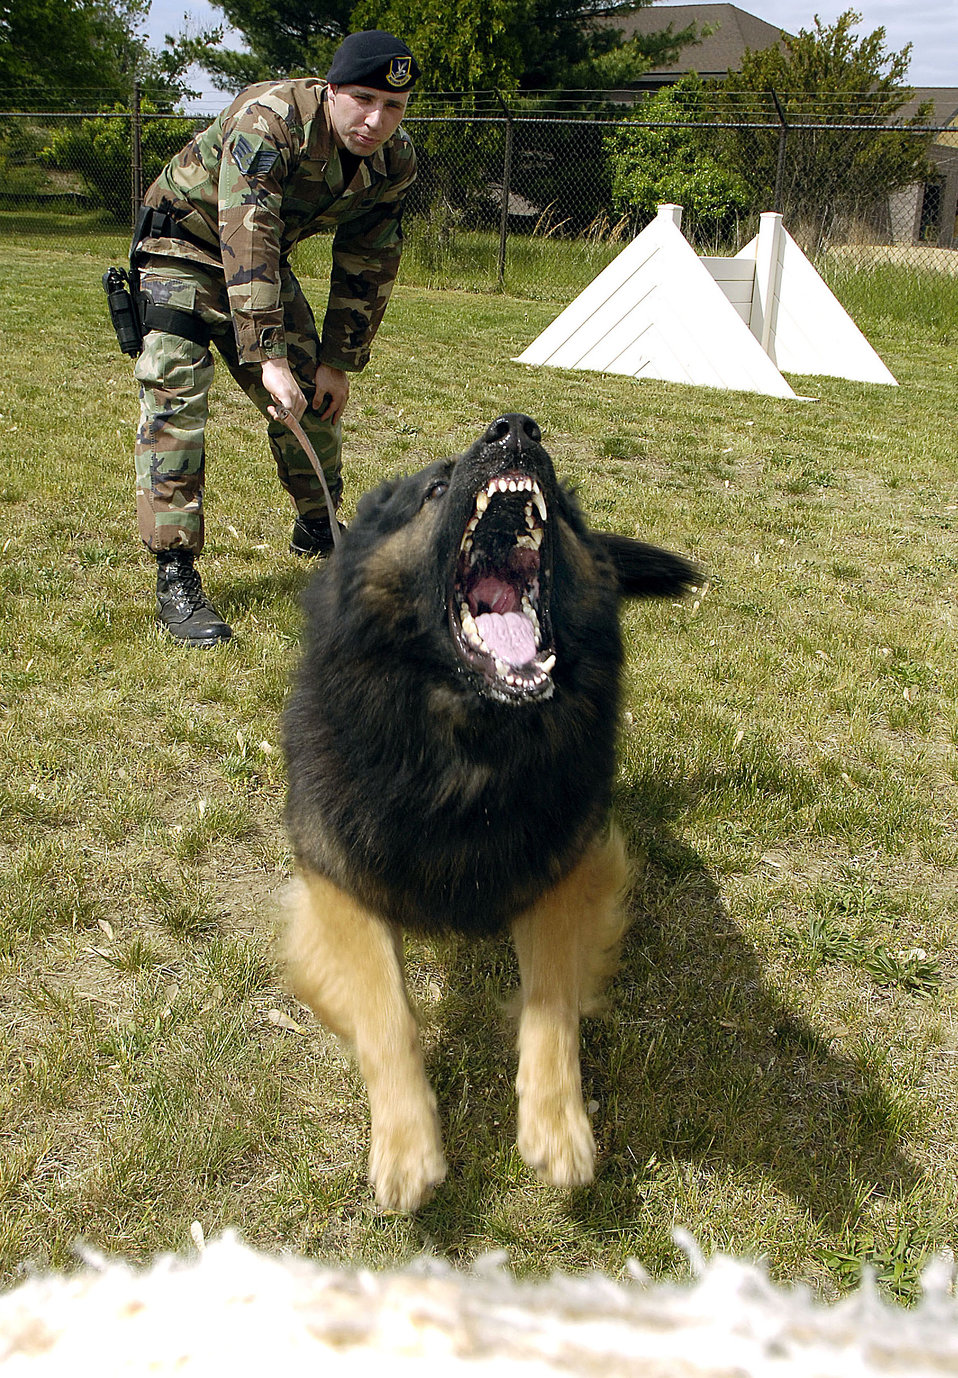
Military working dog trains hard

Staff Sgt. Stephen Upton releases Cezar to